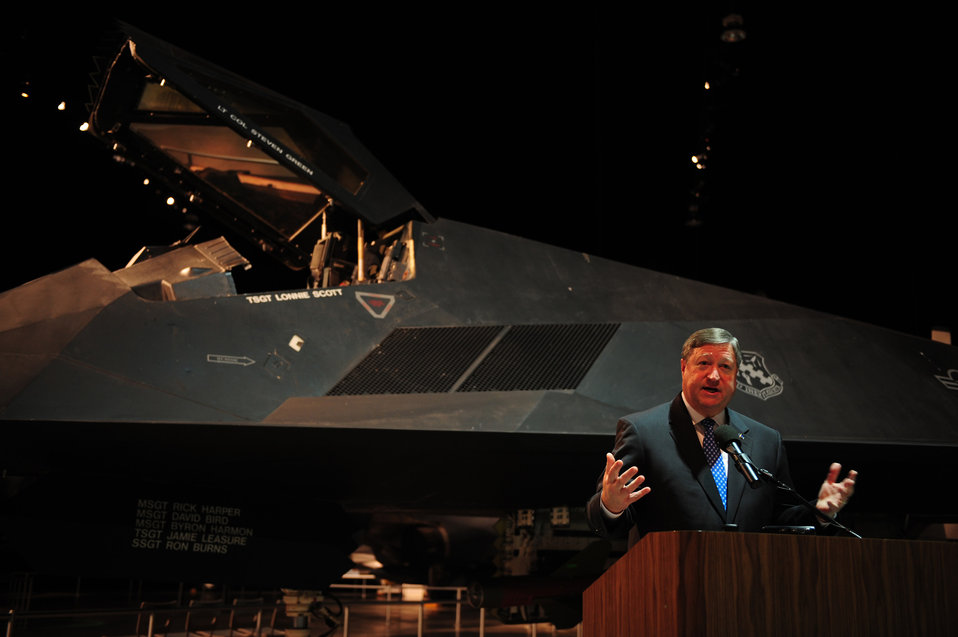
68th Doolittle Raiders Reunion

Secretary of the Air Force Michael B. Donley answers questions from the news media before a dinner honoring the Doolittle Tokyo Raiders at the National Museum of the U.S. Air Force at Wright Patterson Air Force Base, Ohio, April 16, 2010. Secretary Donley said,